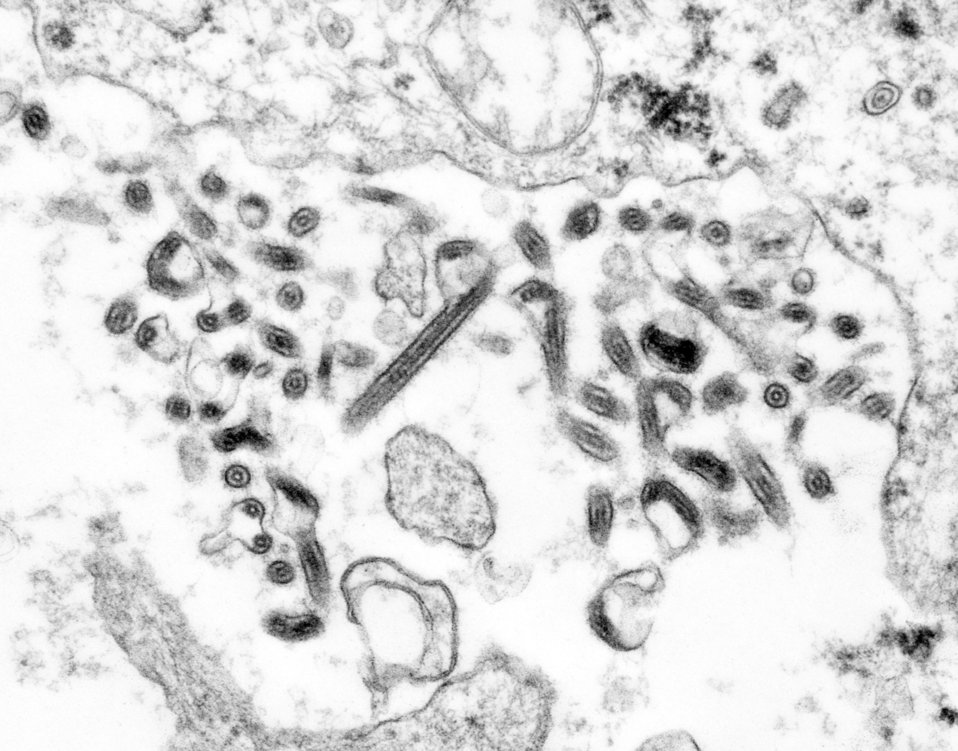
Created by CDC microbiologist Cynthia Goldsmith, this transmission electron micrograph (TEM) revealed some of the ultrastructural morphology displayed by an Ebola virus virion.